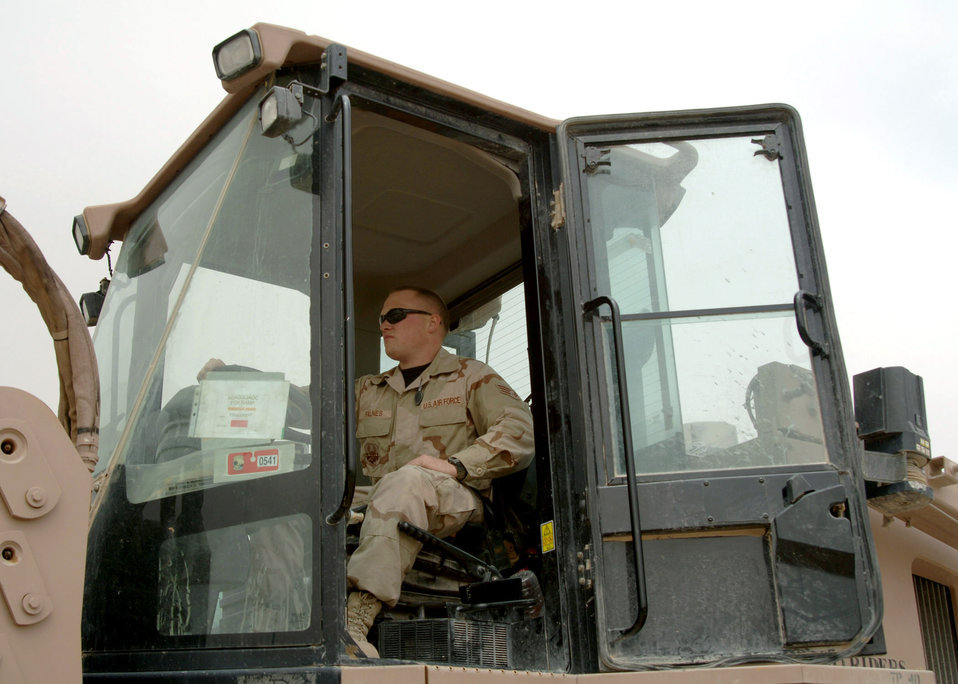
Aerial porters saving countless lives moving air cargo in Iraq

Senior Airman Roger Falnes operates a 10K all-terrain forklift at the aerial port cargo yard April 21 at Al Asad Air Base, Iraq. Since January, Airmen assigned to the 438th Aerial Port Flight have processed more than 32,000 passengers, 15,528 tons of cargo and more than 2,600 aircraft, keeping nearly 12,000 American servicemembers off the roads in convoys.